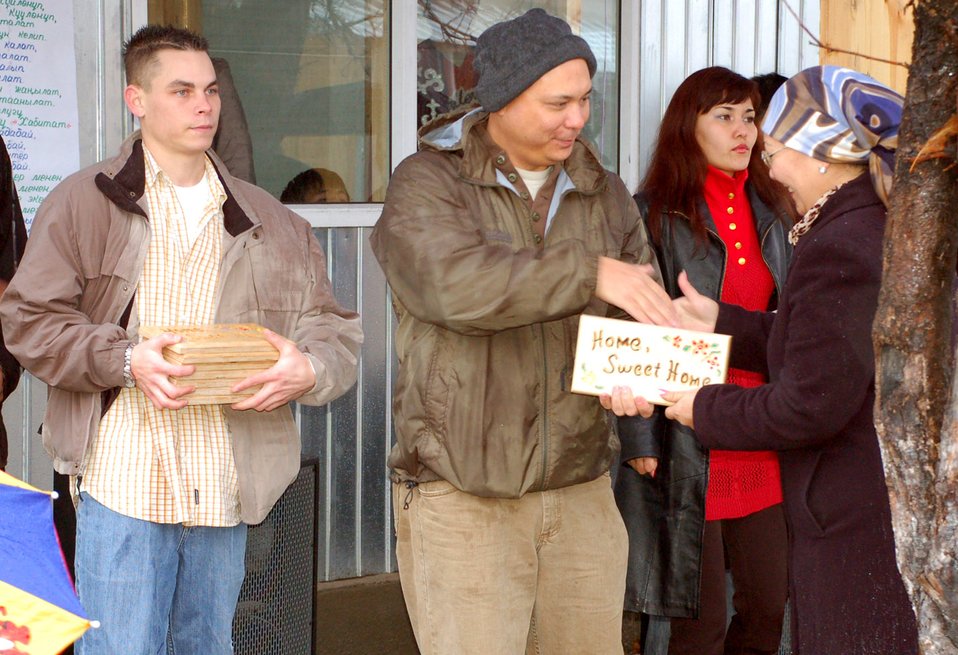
Airmen help Kyrgyz build homes, hope for the future

Tech. Sgt. Richard Kilton presents a housewarming plaque to one of the new Habitat for Humanity homeowners Nov. 23 in Bishkek, Kyrgyzstan, while Airman 1st Class Brandon Edwards assists. Sergeant Kilton is a 376th Expeditionary Security Forces Squadron vehicle control officer at Manas Air Base, Kyrgyzstan, and the Habitat for Humanity focus group leader. Airman Edwards is with the 376th Expeditonary Logistics Squadron. Manas AB Airmen logged more than 1,5000 hours helping to complete the project for the new home owners.